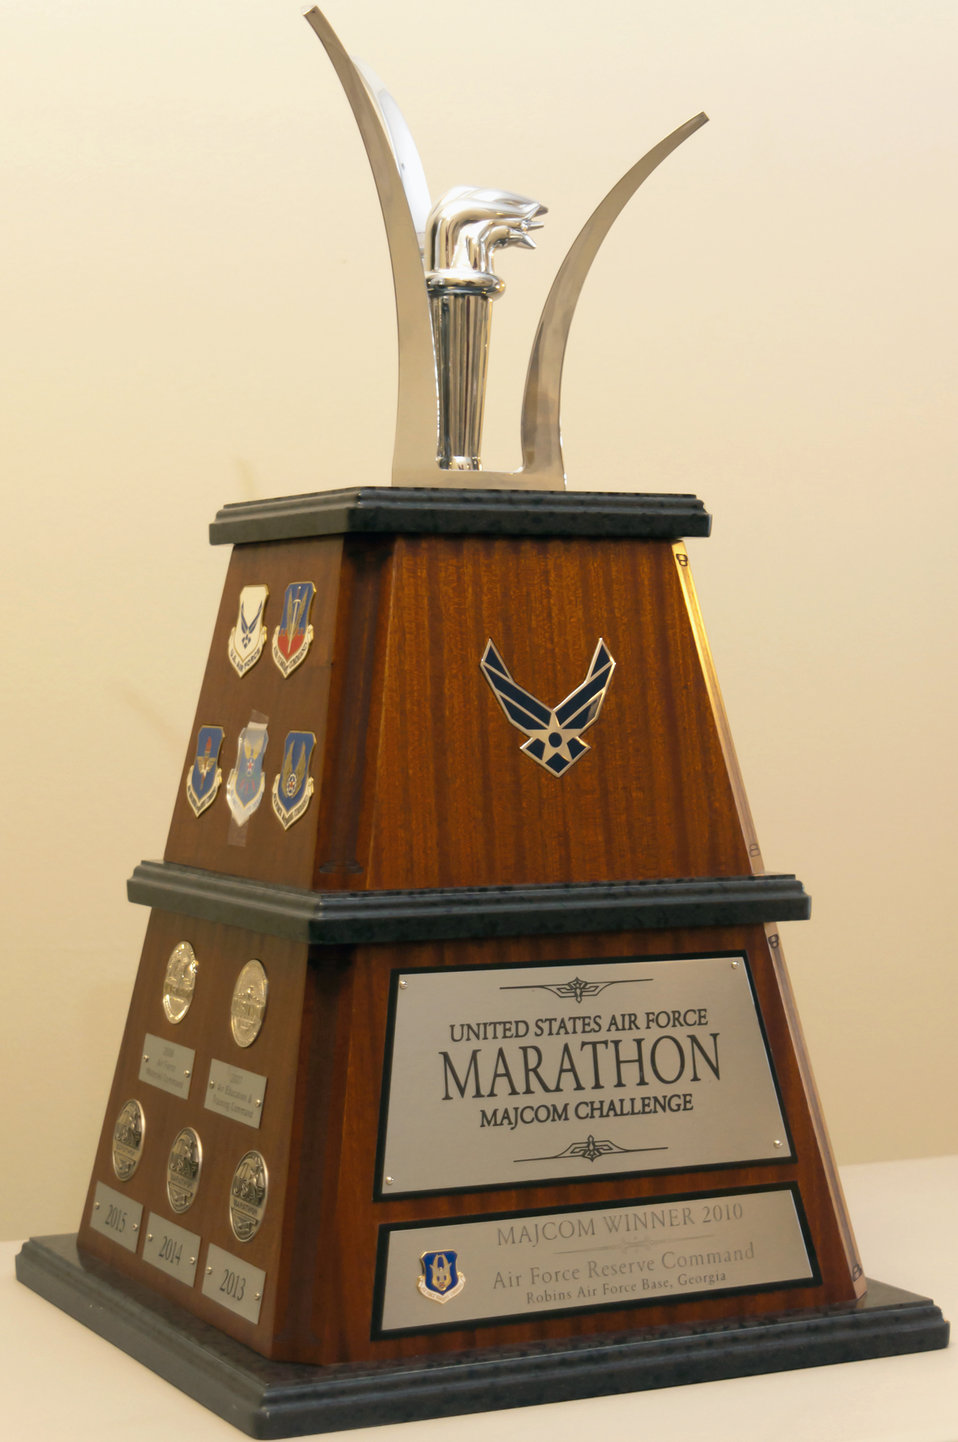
Lt. Gen. Stenner Presents Command With AF Marathon Trophy

The Air Force Marathon Trophy now resides at Headquarters Air Force Reserve Command at Robins Air Force Base, Ga. AFRC won the 2010 marathon honors for having the best participation in the event. The competition is based on a point system, which factors in both participation and performance in the full- and half-marathon and determines which major command in the Air Force has the best long-distance runners.